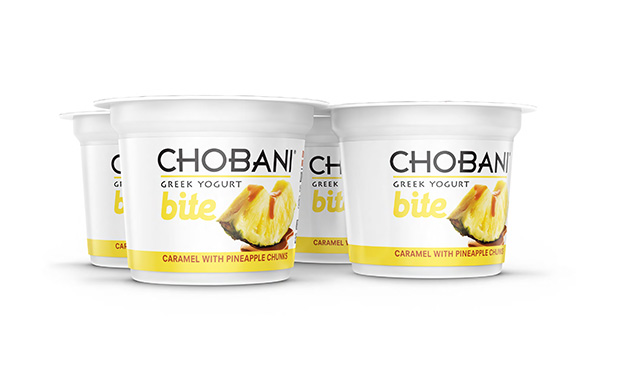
RECALLED – Greek yogurt products

September 6, 2013 – Product Recall – Chobani, Inc. Voluntarily Recalls Greek Yogurt Because of Product Concerns.